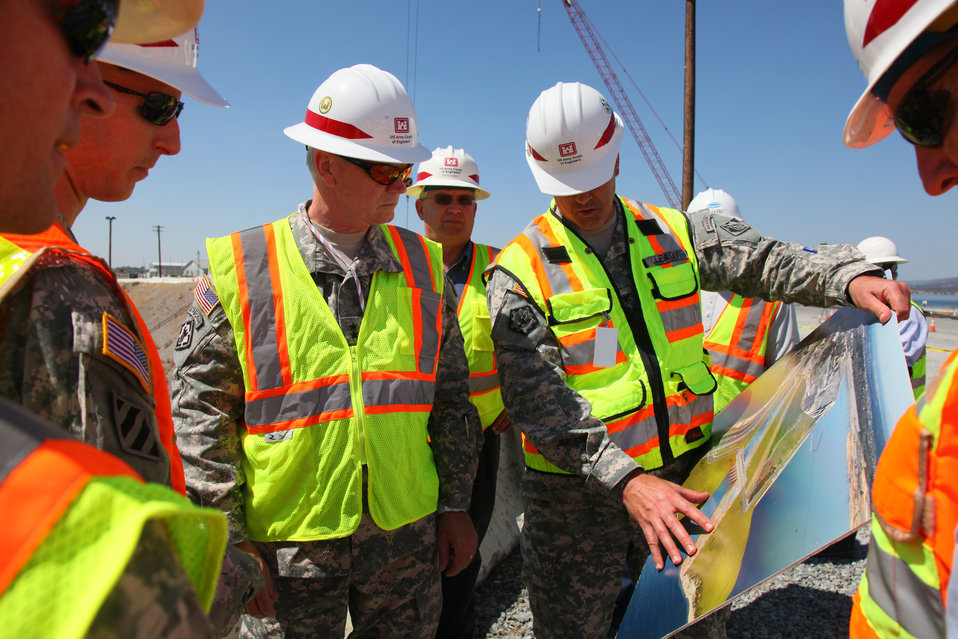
Maj. Gen. Michael Walsh tours Folsom Dam auxiliary spillway

U. S. Army Corps of Engineers Sacramento District commander, Col. Bill Leady (center right), explains the key features of the new Folsom Dam auxiliary spillway to Corps Deputy Commanding General for Civil and Emergency Operations Maj. Gen. Michael J. Walsh (center left) in Folsom, Calif., July 18, 2012. The Sacramento District is building the spillway in cooperation with the U.S. Bureau of Reclamation, the Central Valley Flood Protection Board and the Sacramento Area Flood Control Agency to improve the safety of the existing dam and reduce flood risk for the greater Sacramento area. Walsh toured the project during a visit to Sacramento to learn more about the Corps’ projects in Northern California. (U.S. Army photo illustration by Michael J. Nevins/Released)